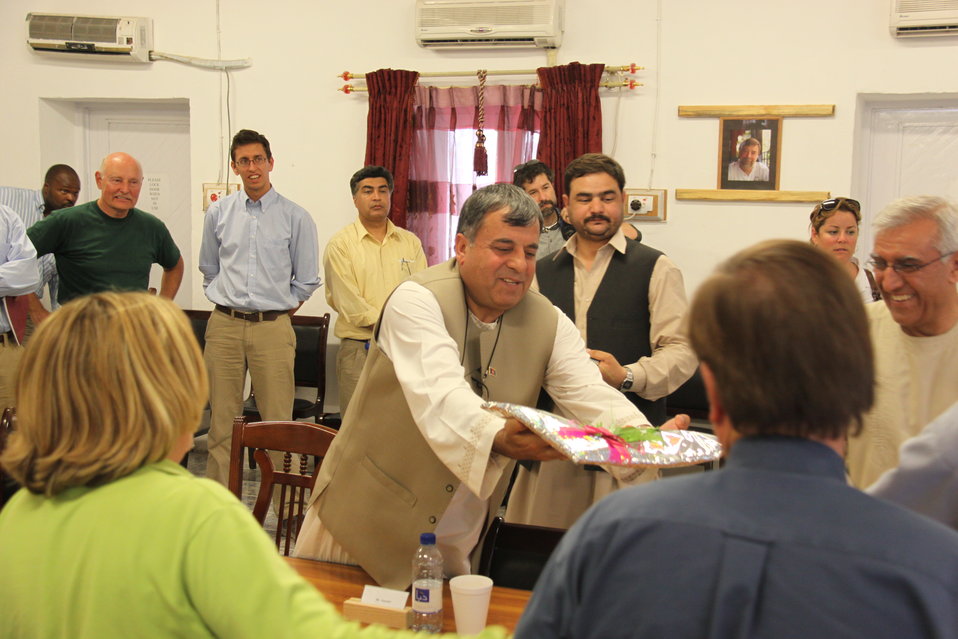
Meeting with Local Leaders in Kandahar